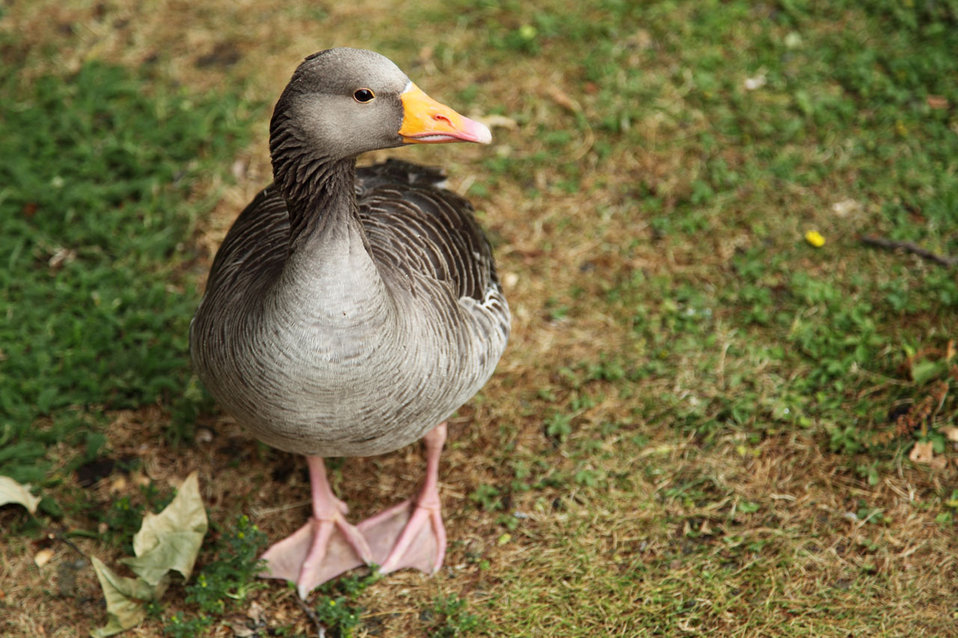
Greylag goose on grass.